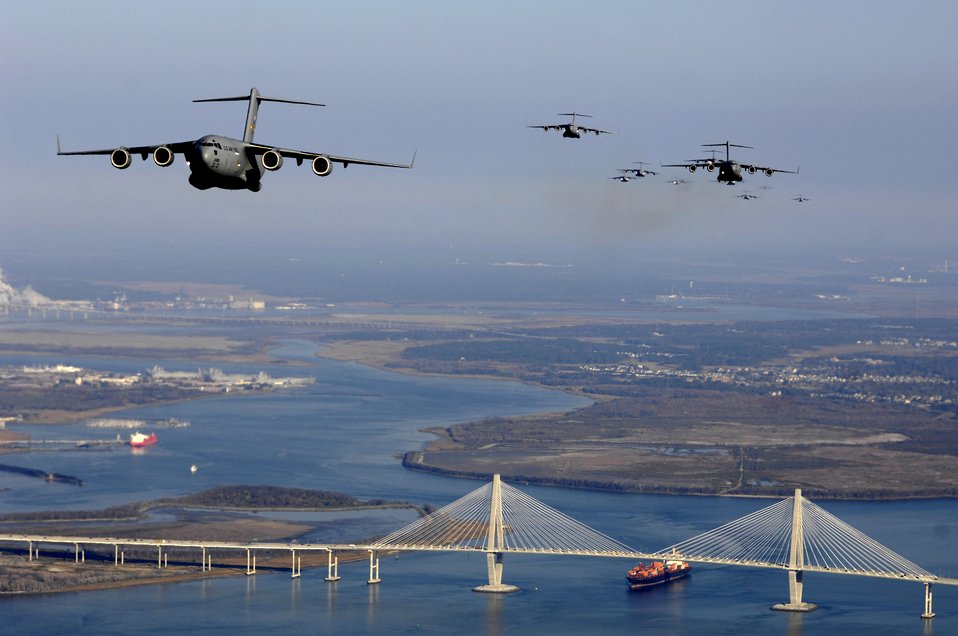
Airlifters take wing

Fifteen C-17 Globemaster IIIs from Charleston Air Force Base, S.C., fly over the city of Charleston's Arthur J. Ravenel Bridge Dec. 20 during a training exercise.